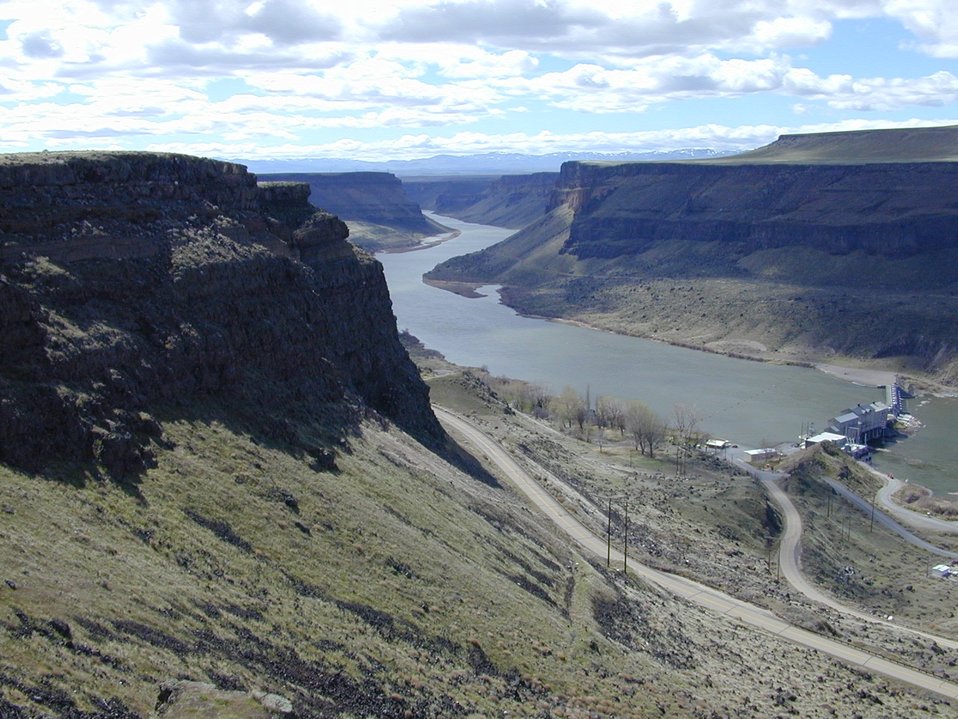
Scenic Snake River Birds of Prey National Conservation Area Lower Snake River District LSRD Snake River Canyon